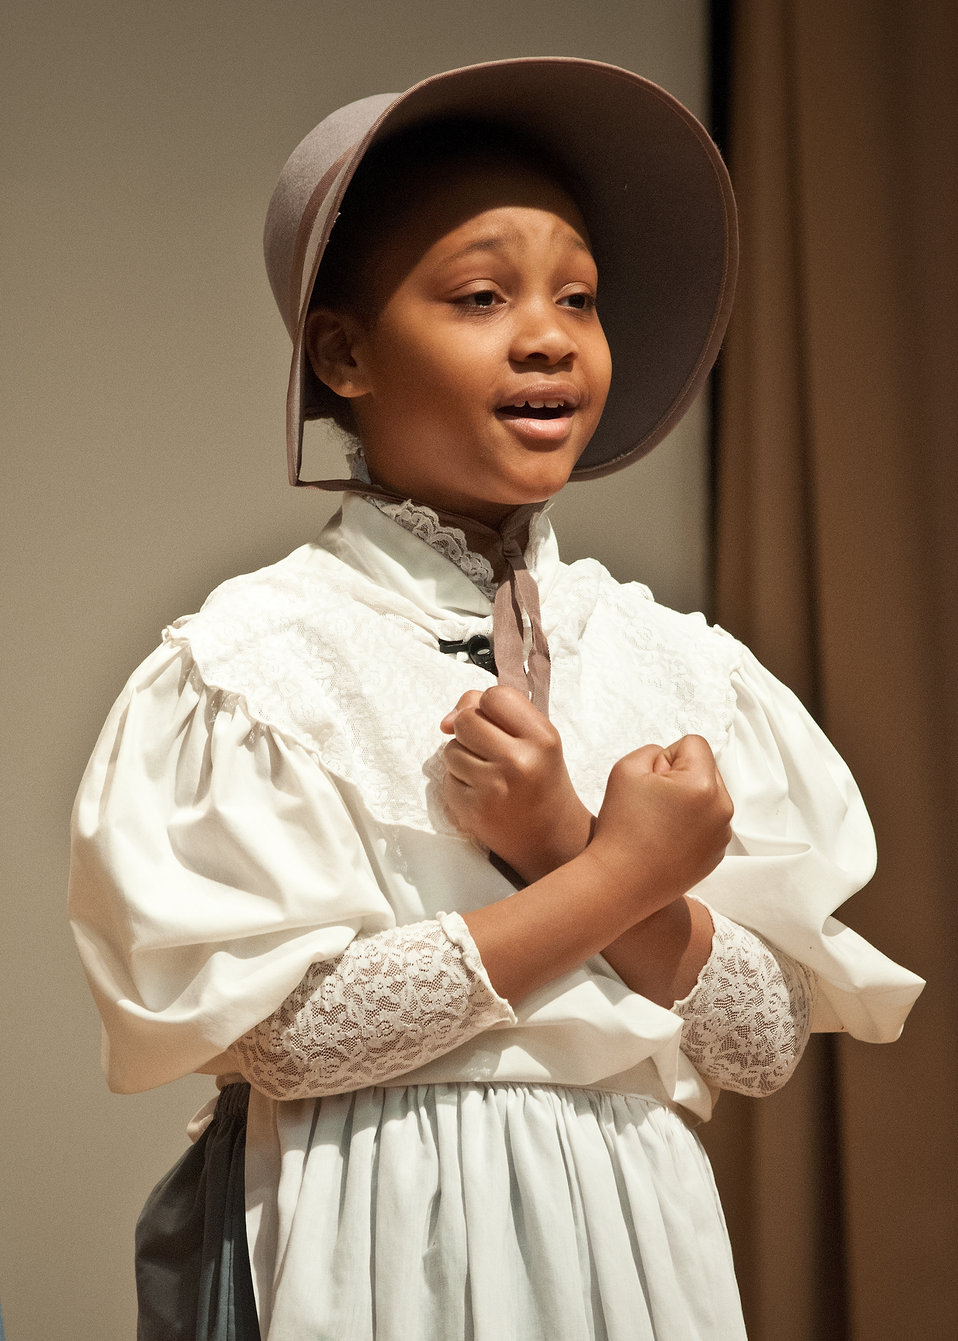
Aja Shakira Ali Muhammed a nine year old fourth grader at Hyde-Addison Elementary School in Georgetown, Washington, D.C. gave a striking rendition of the the narrative Sojourner Truth delivered at the 1851 Ohio Women Rights Convention, “Ain’t I A Woman” to a standing room only crowd at the United States Department of Agriculture Black History Month celebration “Black Women in American Culture and History” in Washington, D.C. on Thursday, February 16, 2012.